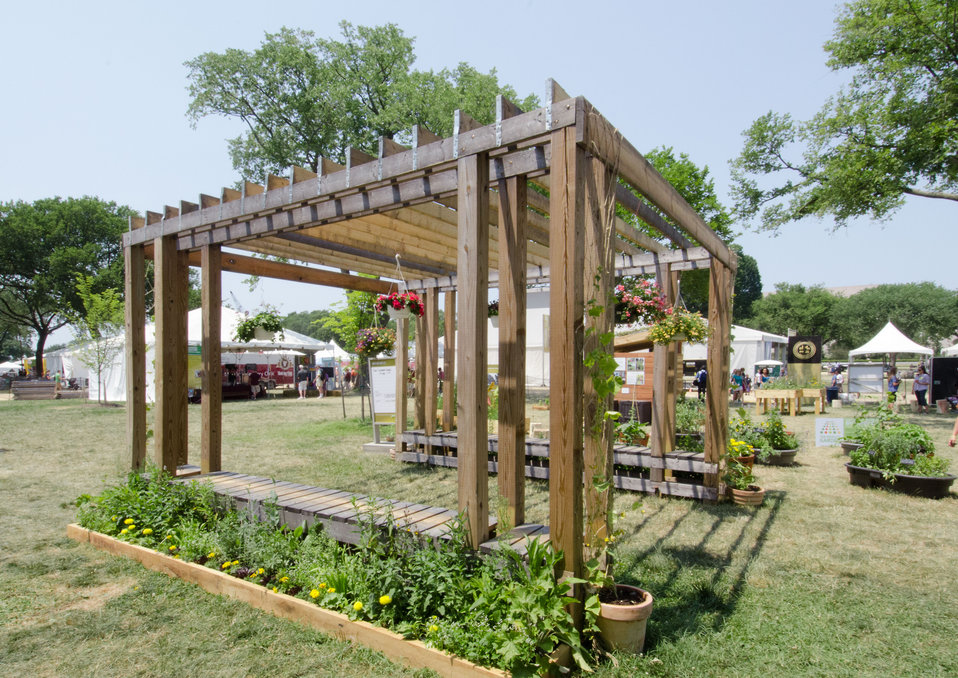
This gazebo serves as a venue for speakers and demonstrated that designs such as this provide an attractive seating area, sturdy place for hanging plants, trellis for plant vines and an ideal place to enjoy the aroma of herbs at the 2012 Smithsonian Folklife Festival in Washington, D.C., on Thursday, June 28, 2012. If left to grow, the canopy of plants serve to shade and humidify arid climates by creating a cooler microclimate. One of the three themes this year is “Campus and Community.” It celebrates the 150 years of the USDA and the Land-Grant University System. The U.S. Department of Agriculture (USDA) and the Land-Grant system extend education across the country, contributing to American agriculture success and rural prosperity. “Campus and Community” has demonstrations, discussions, hands-on activities, and entertainment to that showcase the many ways that this partnership works to improve American agriculture and rural life.